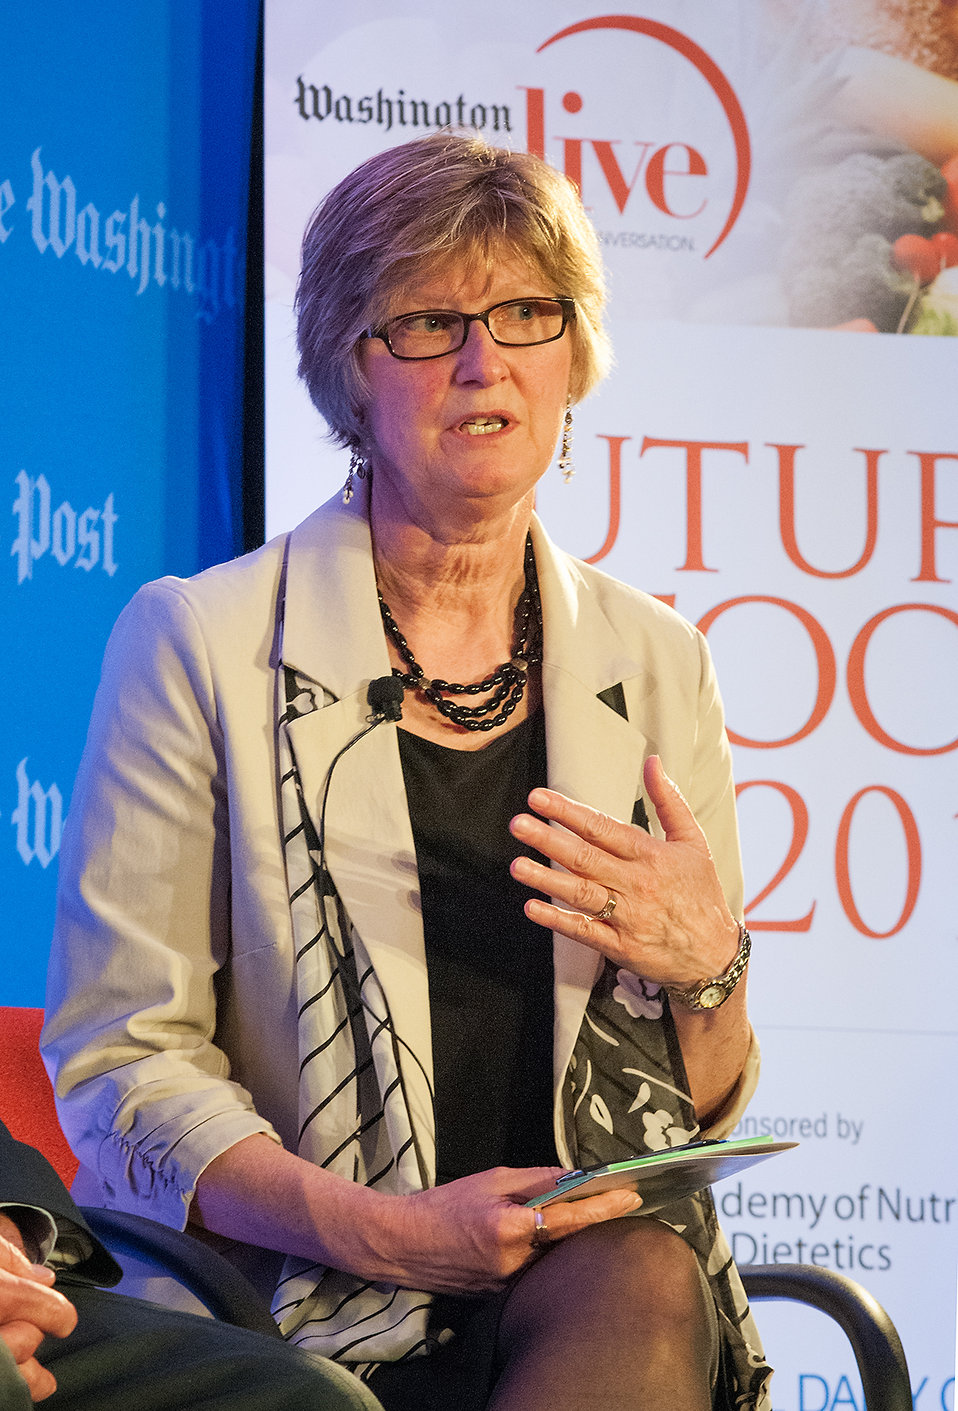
National Corn Growers Association President Pam Johnson discusses From the Farm: Innovations and the Latest Advances in Food Production during the annual live forum, “Future of Food: Building a Sustainable Food System 2013,” sponsored by the Washington Post Live in Washington, D.C. on Wednesday, May 22, 2013. Agriculture Secretary Tom Vilsack, leading agricultural, government and nutrition experts discussed expanding healthy, sustainable food systems including public-private partnerships, the market’s role in nutrition and the future of agricultural innovation.